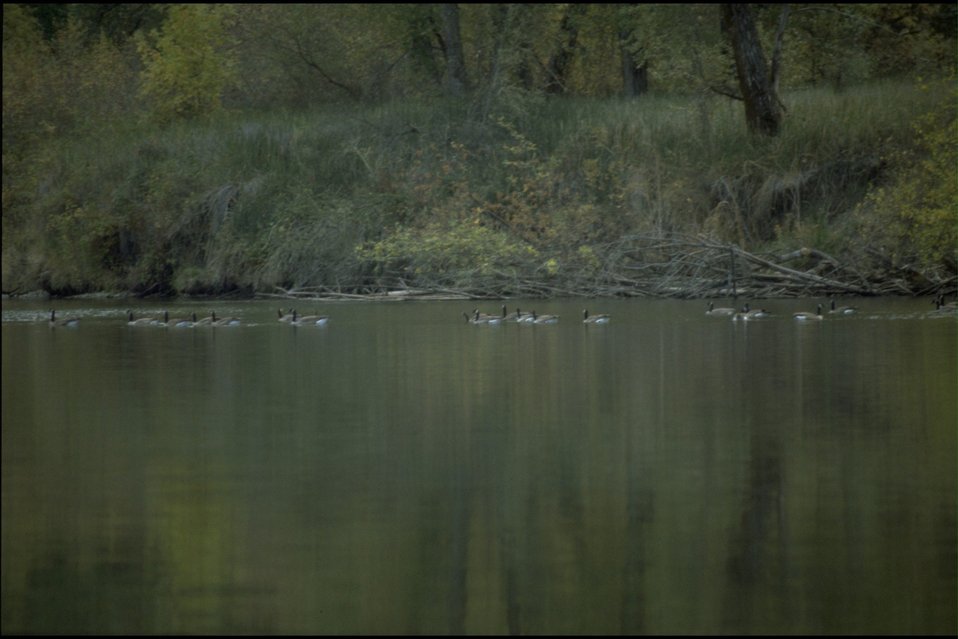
Rogue River - Canadian Geese.